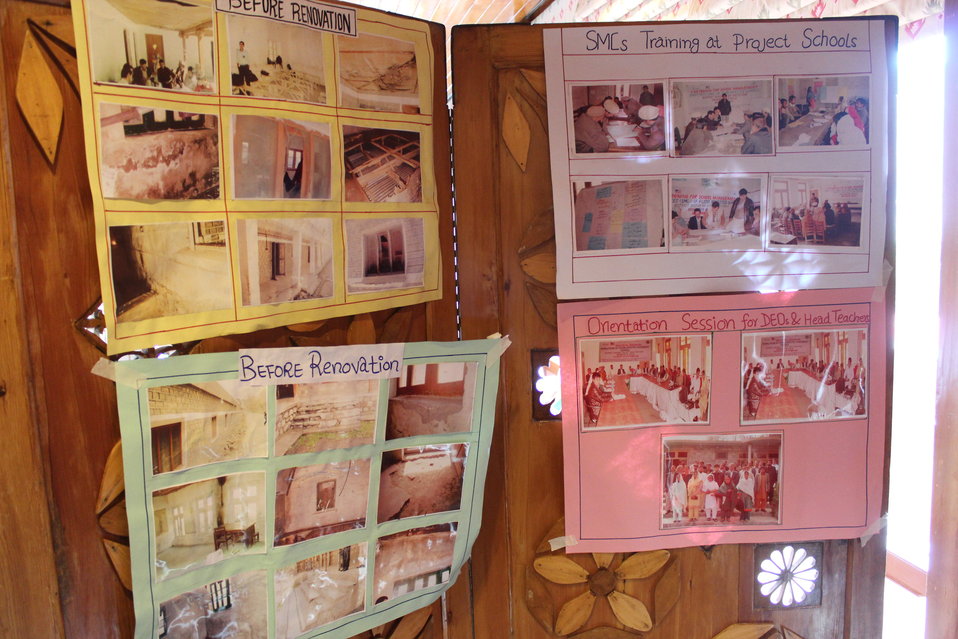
Deputy Director Karen Freeman’s visit to Gilgit Library

Karen Freeman visited the Municipal Gilgit Library on Monday, July 9. She was accompanied by other USAID staff and the staff from the Ambassador’s Fund Program. A the library, she met with Deputy Commissioner of Gilgit, Mr. Arqam and library staff, toured a photo display, and had an informal discussion with the library staff and community members about the USAID-funded project. Library staff showed the equipment funded by USAID (computers, internet, scanners, etc). The visit concluded by a Q & A session with media.